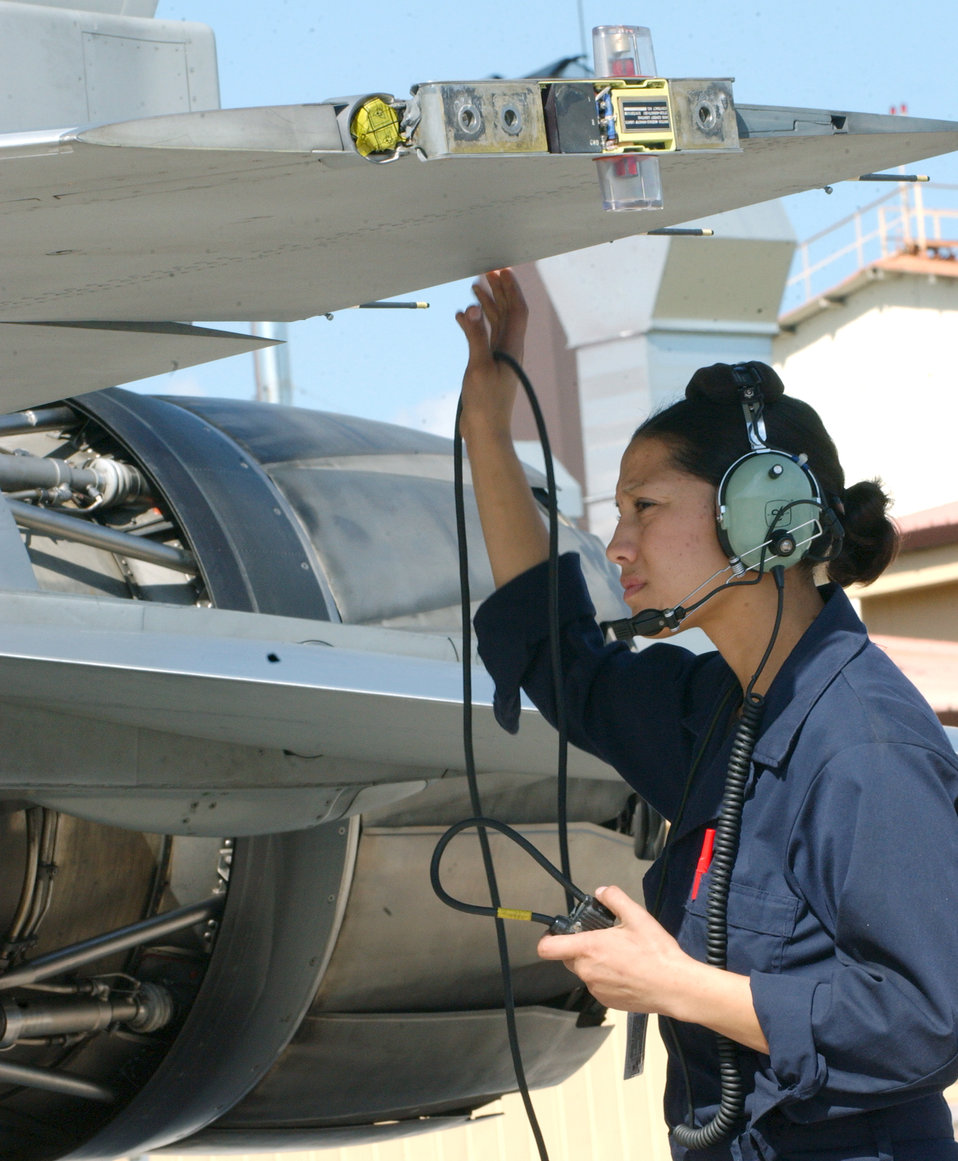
A full tank

AVIANO AIR BASE, Italy -- Senior Airman Maria Boneham helps refuel an F-16 Fighting Falcon while competing for the Golden Drum award here Sept. 27. Airman Boneham is a crew chief assigned to the 31st Aircraft Maintenance Squadron.